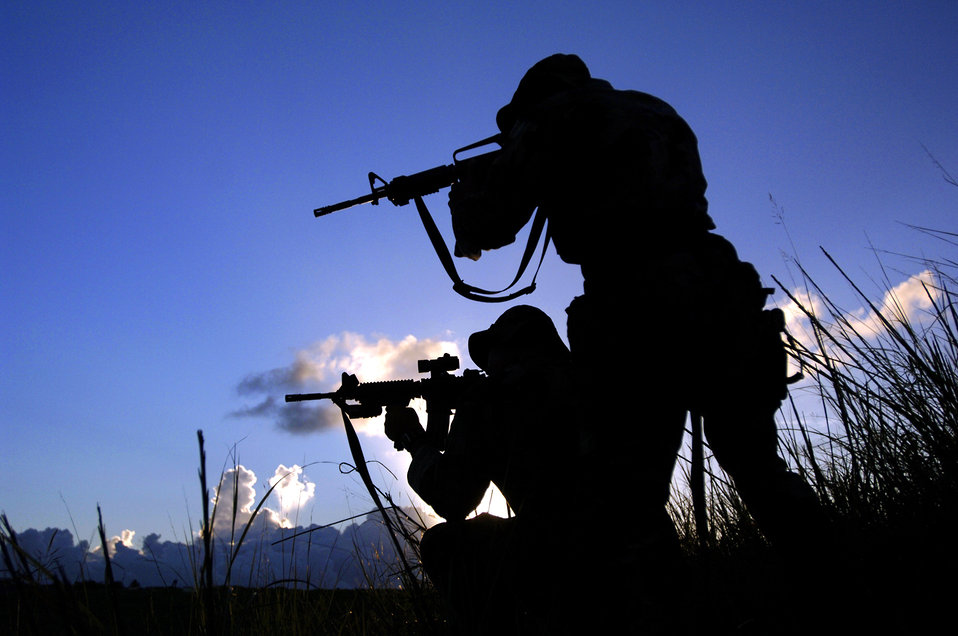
Standing guard

ANDERSEN AIR FORCE BASE, Guam -- Air Force Security Forces personnel stand guard defending their campsite after a tracking mission throughout the jungles and mountains of Guam during a special response team training course held at the U.S. Naval Forces Marianas Naval Base recently. They are assigned to 613th Contingency Response Group.